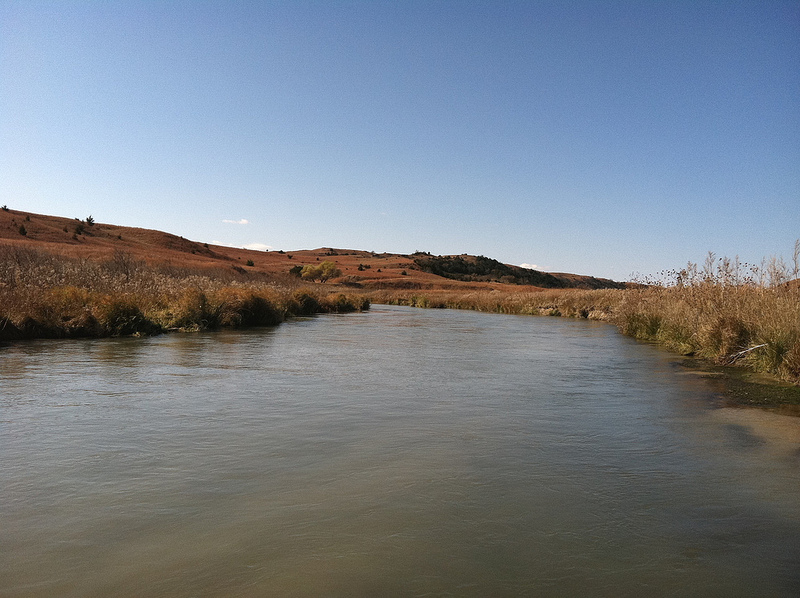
Dismal River

This picture of the river was taken on October 28, 2011, while on the river sampling for the plains topminnow.

Location: Nebraska Sandhills

Credit: Lindsay Vivian / USFWS

Photo Contest Entry #41